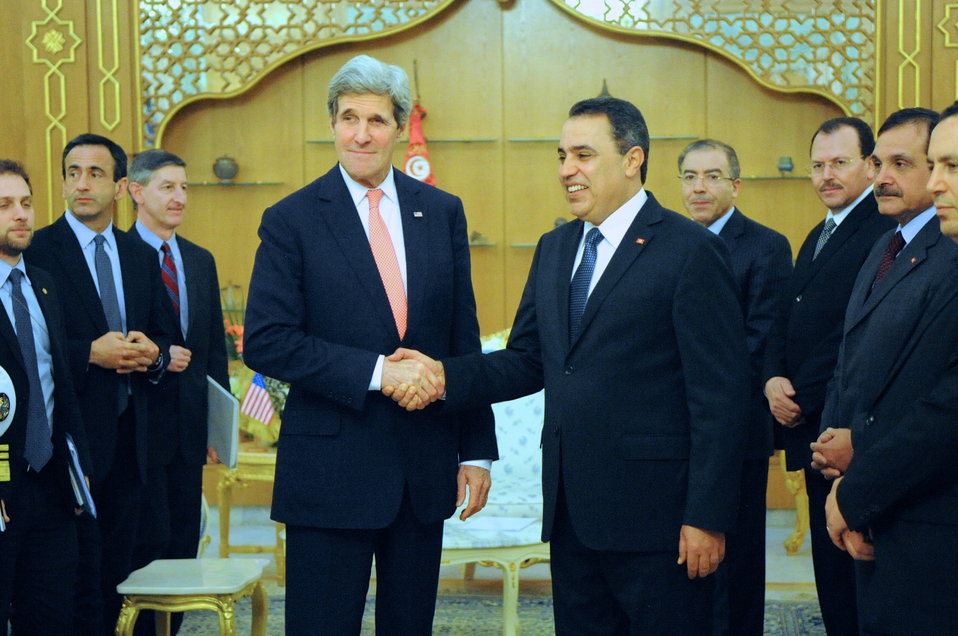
Secretary Kerry is Greeted by Tunisian Prime Minister Joma'a in Carthage

U.S. Secretary of State John Kerry is greeted by Tunisian Prime Minister Mehdi Joma'a upon his arrival at the Dar Diafa Palace in Carthage, Tunisia, on February 18, 2014.